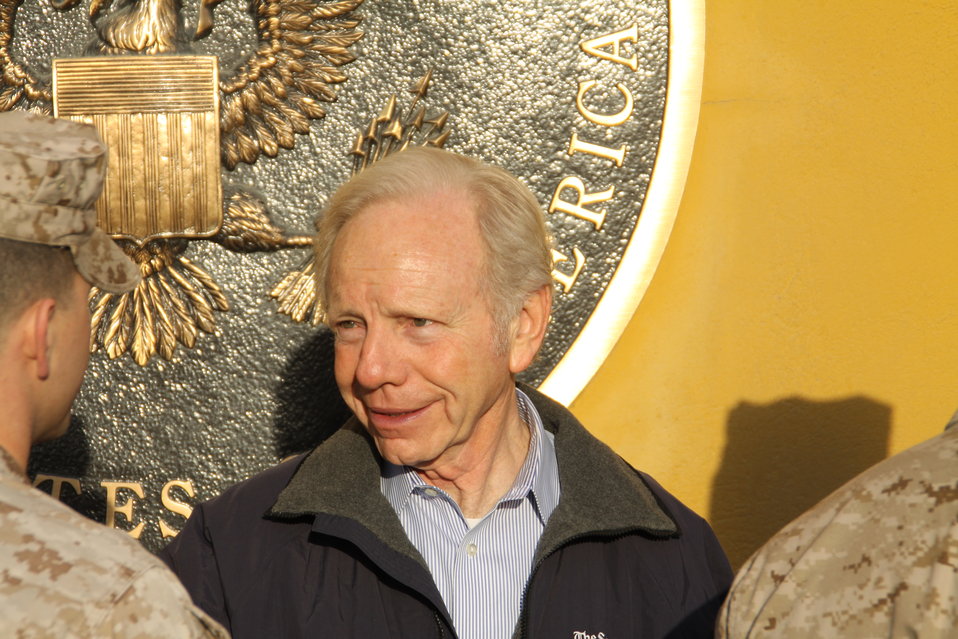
Senator Lieberman